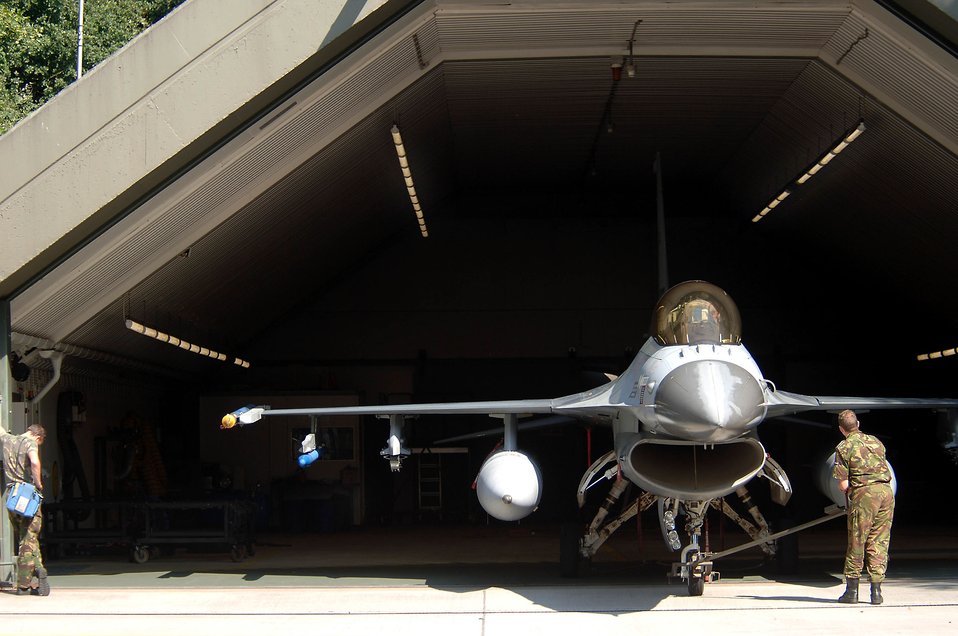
Exchange program connects U.S., Dutch Airmen

VOLKEL AIR BASE, Netherlands -- Dutch air force Sgt. Martijn De Boer (left) and Cpl. Jordy Luske tow a 306th Tactical Fighter Training Squadron F-16 Fighting Falcon into a hangar here. The plane returned from a training flight with Lt. Col. David Stein, an Air Force exchange pilot, at the controls. The colonel, from the Arizona Air National Guard's 162nd Fighter Wing at Tucson, Ariz., is ending a three-year tour with the Dutch air force's 1st Fighter wing. The Dutch airmen are crew chiefs.